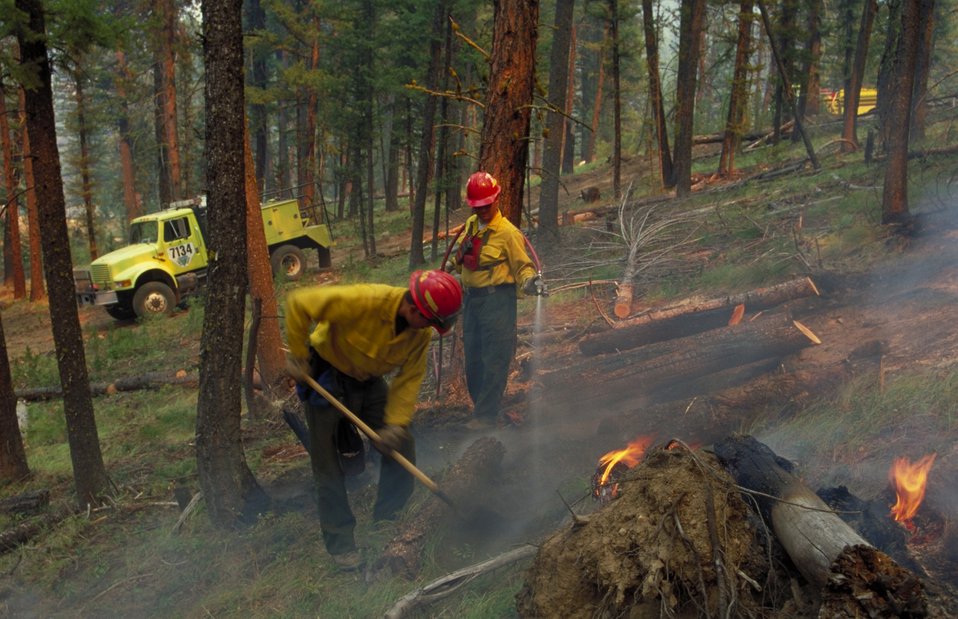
Wildland fire fighters Fire Season 2000 Lower Snake River District LSRD